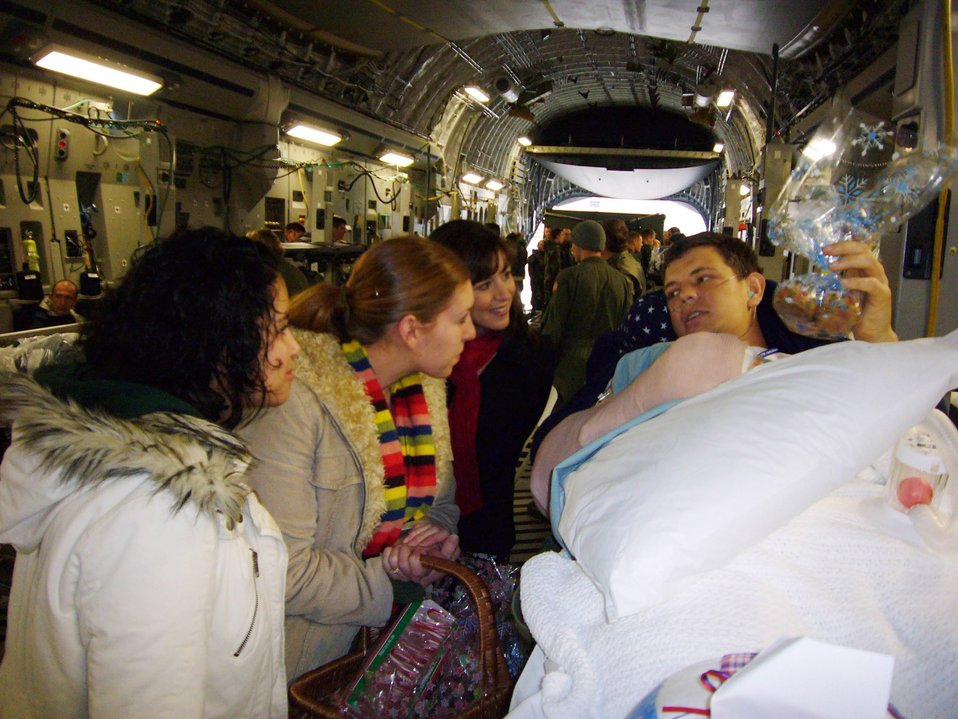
Wounded Warrior program delivers cookies

Paige Norris-Miller (left), Katie Jensen and Amy Smith deliver home-baked cookies to Tech. Sgt. Adam Popp Dec. 11 on board a C-17 Globemaster III at Ramstein Air Base, Germany. Mrs. Norris-Miller, Mrs. Jensen, and Mrs. Smith are part of the 37th Airlift Squadron spouses' group.